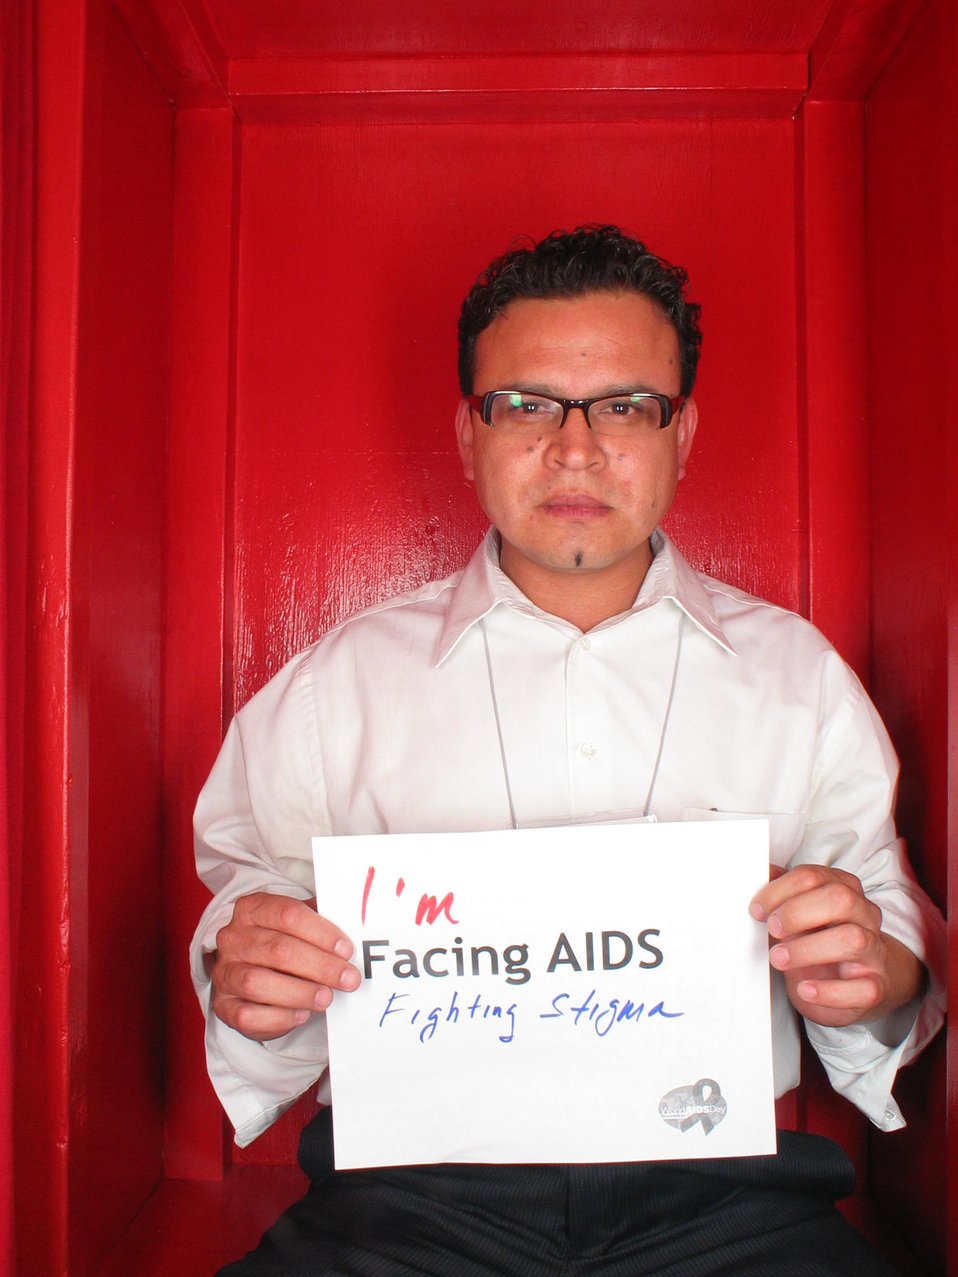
I'm Facing AIDS fighting stigma.